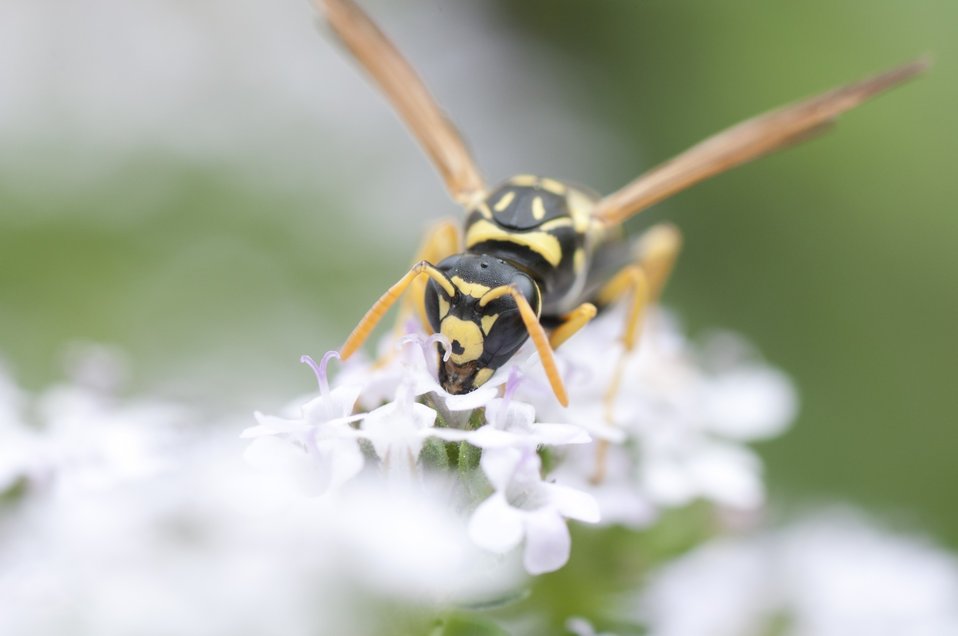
Bee holding a flower

Bee with its head inside the flower eating.